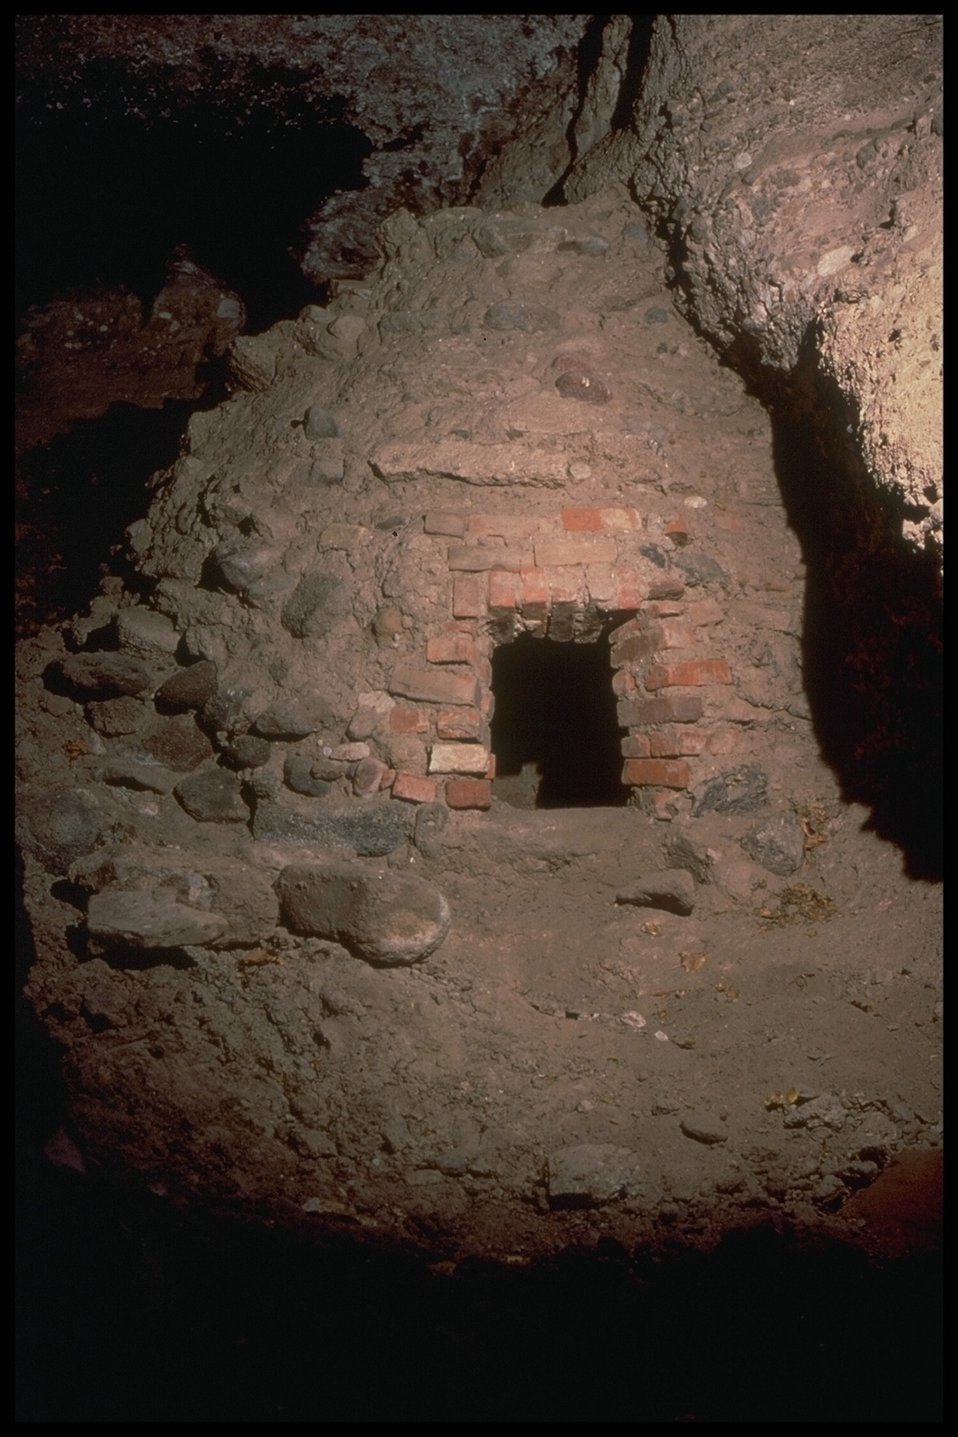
An ancient dwelling on Arizona's Public lands.